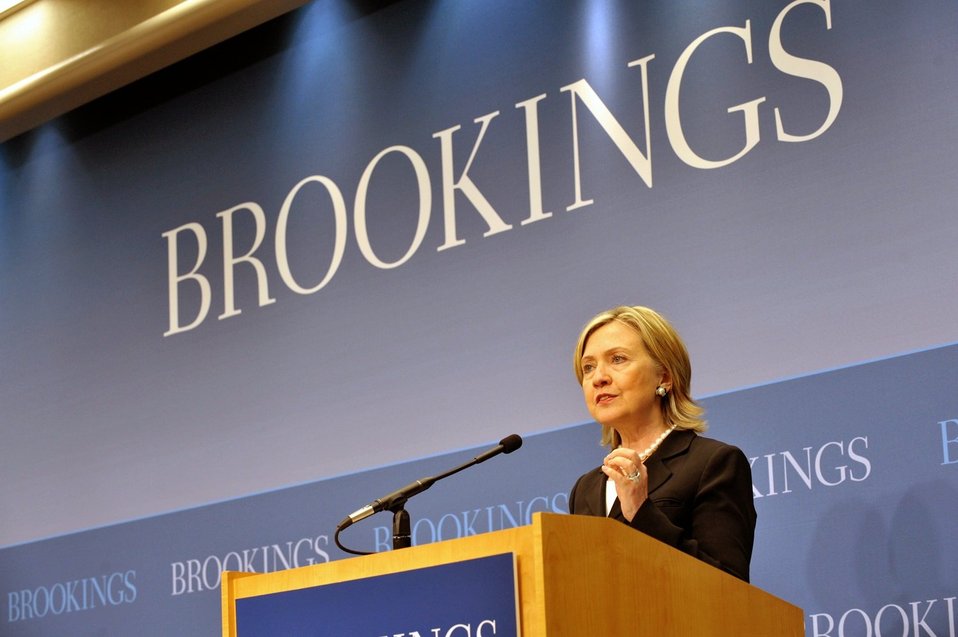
Secretary Clinton Delivers Remarks at the Brookings Institute

U.S. Secretary of State Hillary Rodham Clinton delivers remarks on the Obama Administration's National Security Strategy at the Brookings Institute on May 27, 2010, in Washington, D.C.